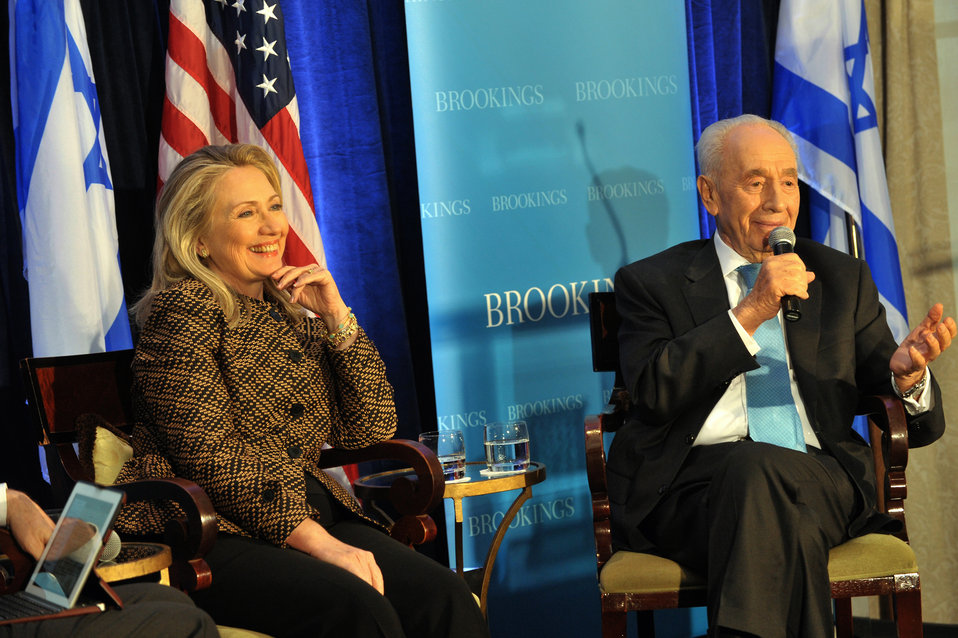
Secretary Clinton Participates in a Joint Discussion With Israeli President Peres

U.S. Secretary of State Hillary Rodham Clinton participates in a joint discussion with Israeli President Shimon Peres hosted by The Brookings Institution in Washington, D.C. on June 12, 2012.